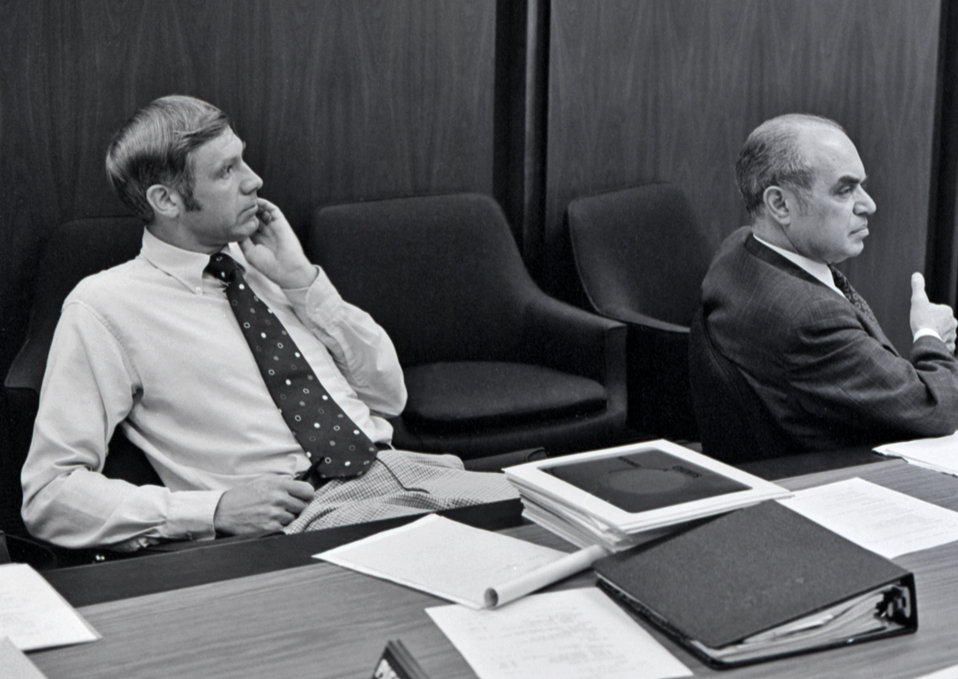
This 1977 photograph depicted former Centers for Disease Control and Prevention Director William H. Foege, M.D., M.P.H. (left) as he was seated at a conference during his directorship, which lasted from 1977 until 1983.